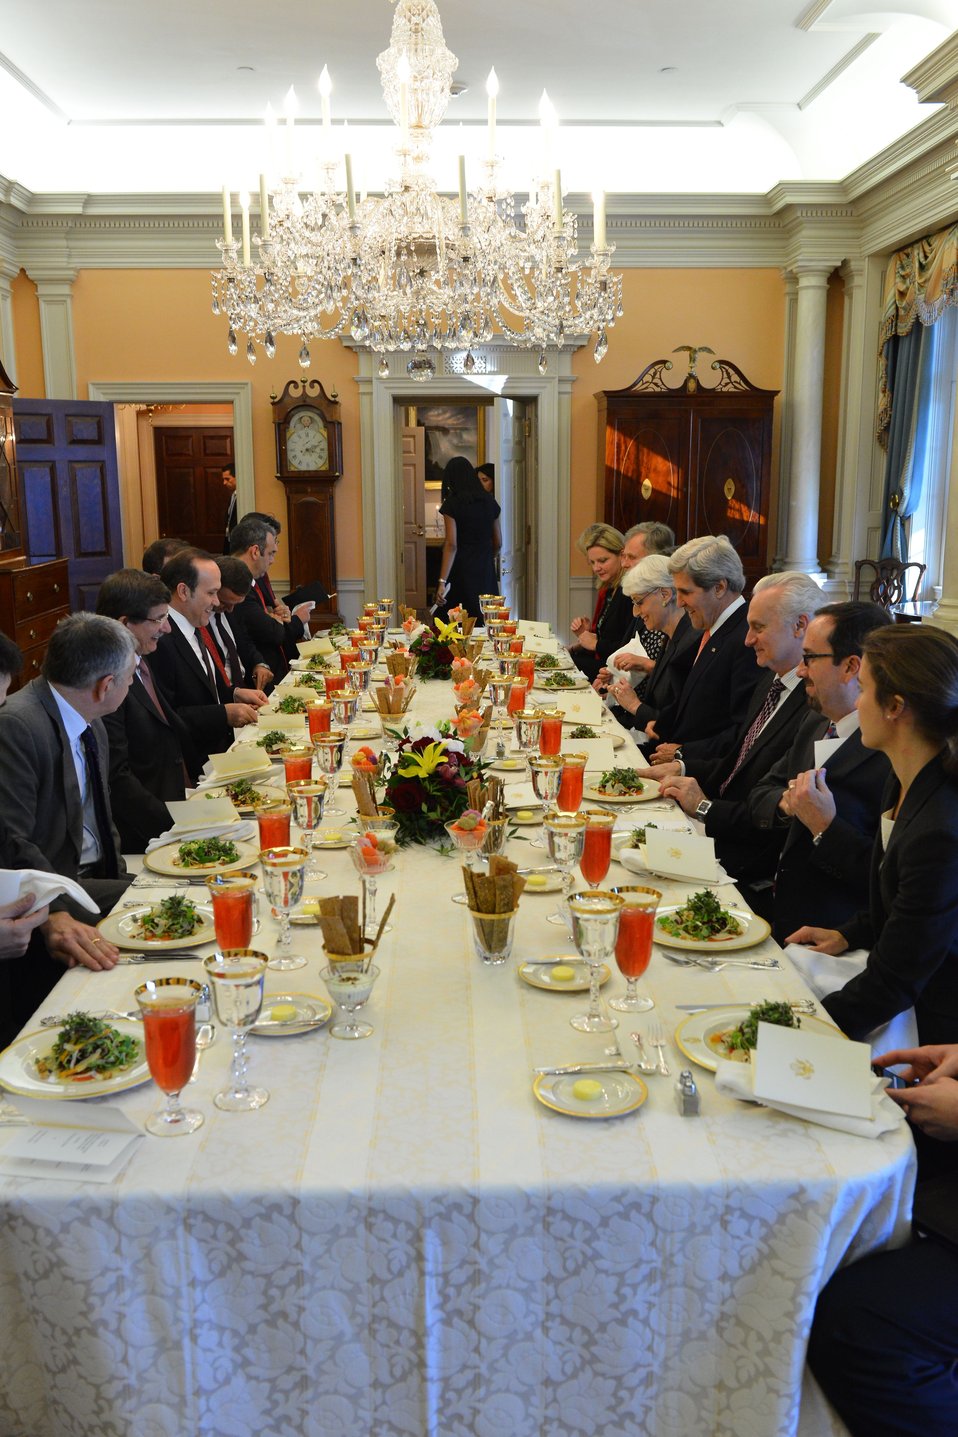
Secretary Kerry Holds a Working Lunch With Turkish Foreign Minister Davutoglu

U.S. Secretary of State John Kerry holds a working lunch with Turkish Foreign Minister Ahmet Davutoglu at the U.S. Department of State in Washington, D.C., on November 18, 2013.